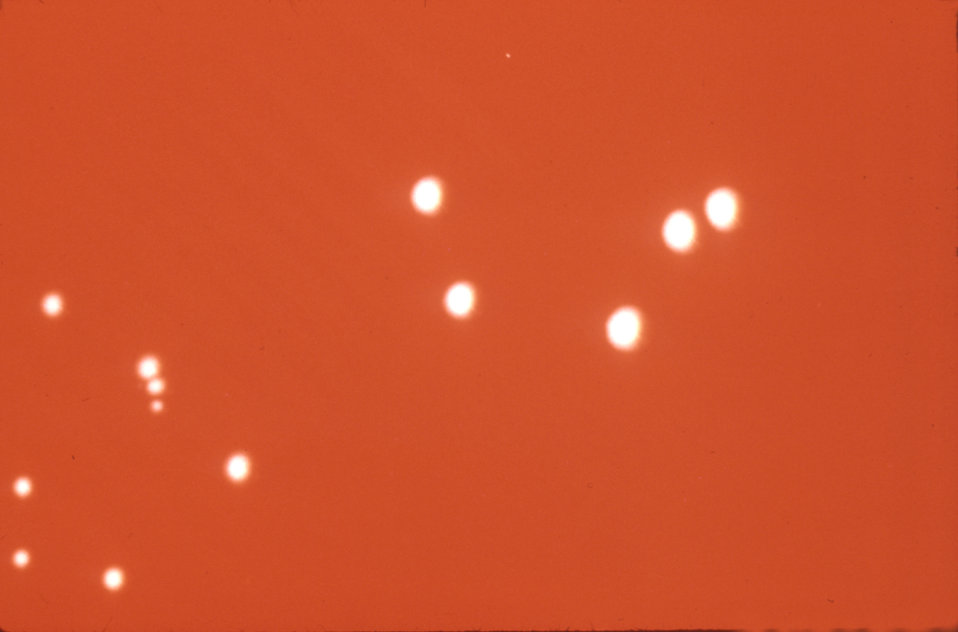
This image shows colonies of Peptostreptococcus asaccharolyticus, formerly Peptococcus aerogenes, on blood agar.